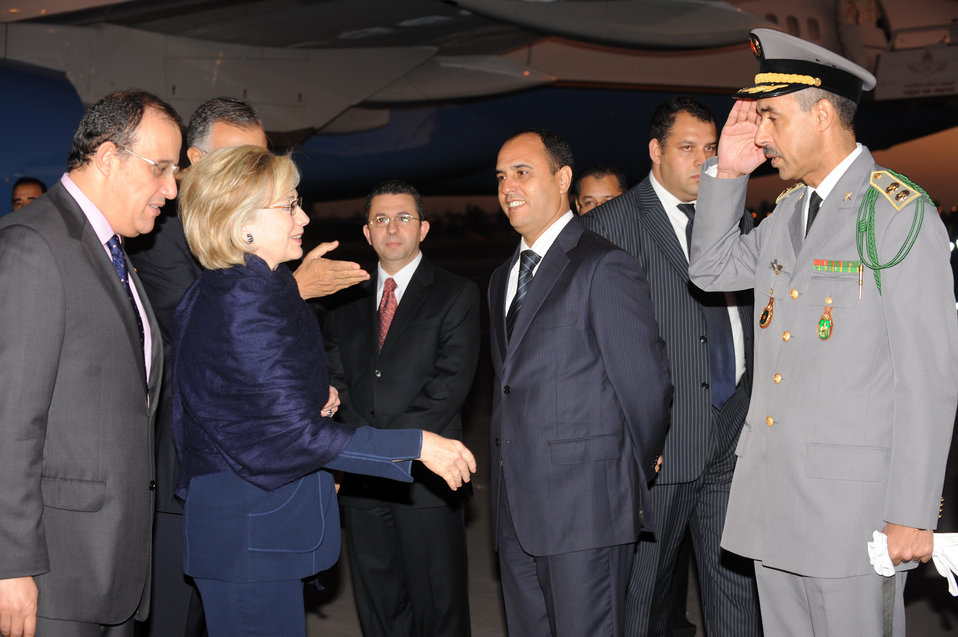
Secretary Clinton Attends 6th Forum for the Future

U.S. Secretary of State Hilllary Rodham Clinton is greeted at the airport before she attends the 6th Forum for the Future in Marrakesh, Morocco November 2, 2009.